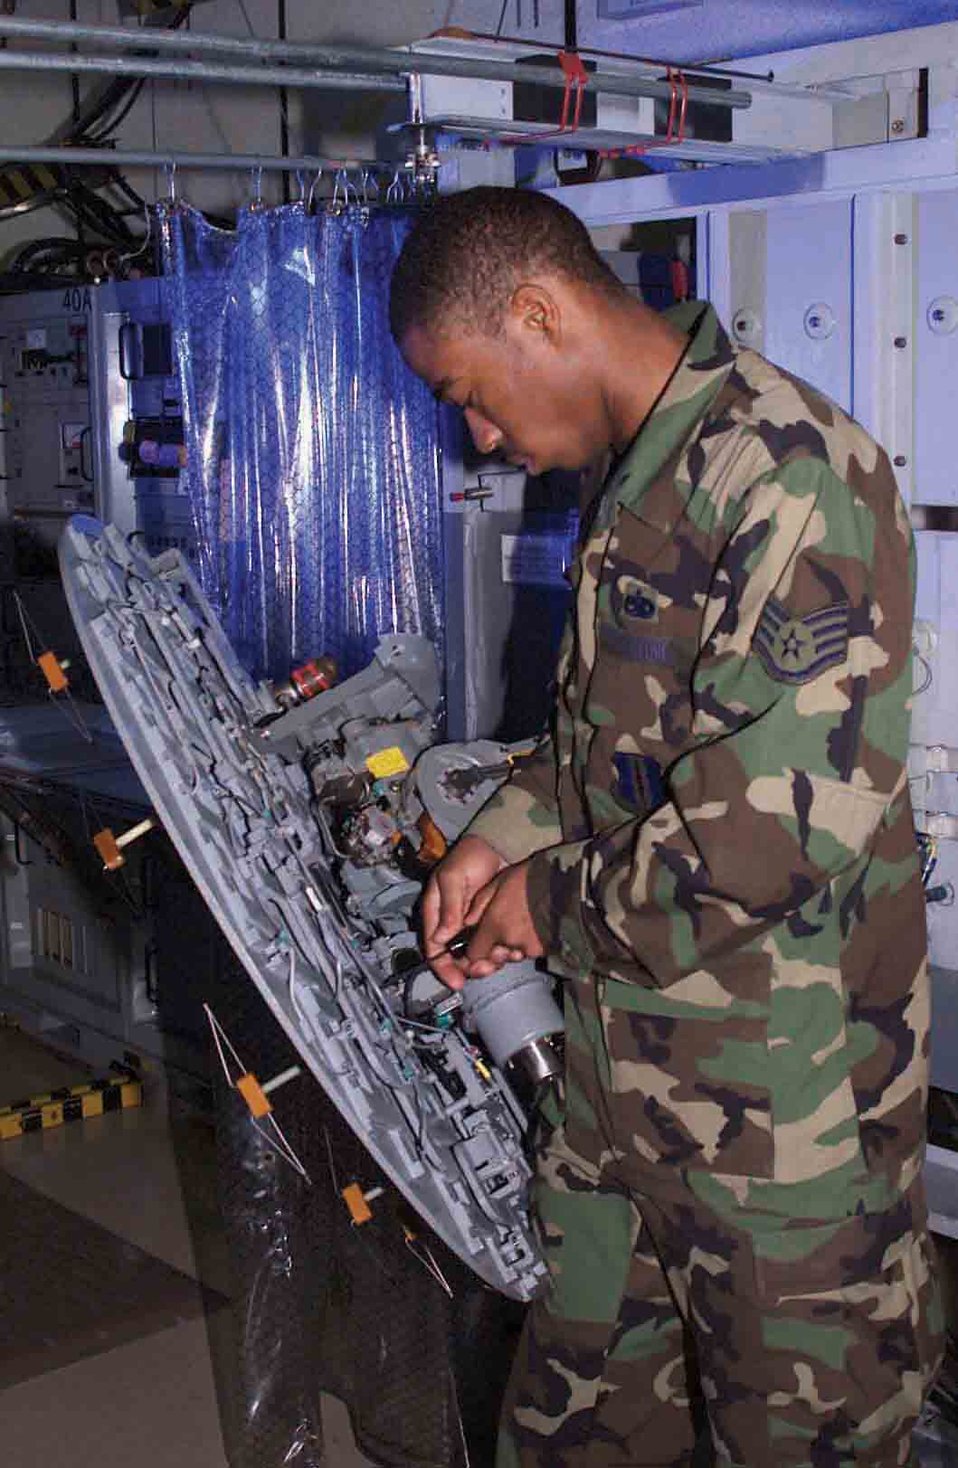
Keeping Eagles flying

EGLIN AIR FORCE BASE, Fla. -- Staff Sgt. Johnakin Thomas repairs an F-15 Eagle's radar antenna. He is an avionics specialist with the 33rd Maintenance Squadron here.